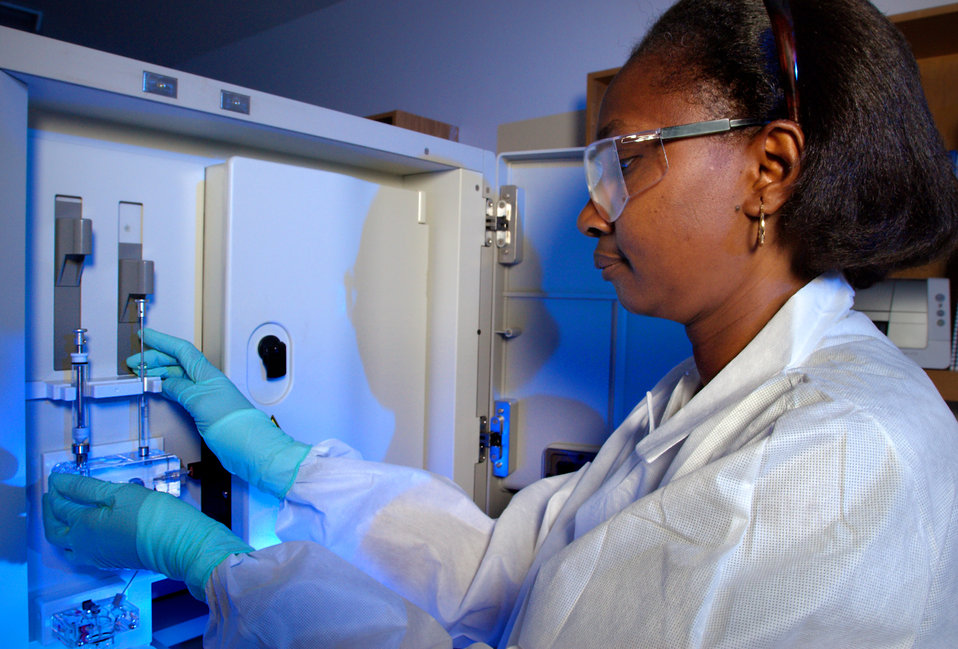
This 2007 photograph depicts CDC Guest Researcher, Dr. Karidia Diallo, preparing the ABI DNA Analyzer for drug resistance testing upon samples from PEPFAR (President's Emergency Plan for AIDS Relief) country patients. With this instrument, Dr. Diallo is able to analyze the sequencing and fragment characteristics of a uniquely coded DNA molecule. Dr. Diallo is a staff member inside the International Lab Branch (ILB) of the Global AIDS Program (GAP), which is a branch of the National Center for HIV/AIDS, Viral Hepatitis, STD, and TB Prevention (NCHHSTP).